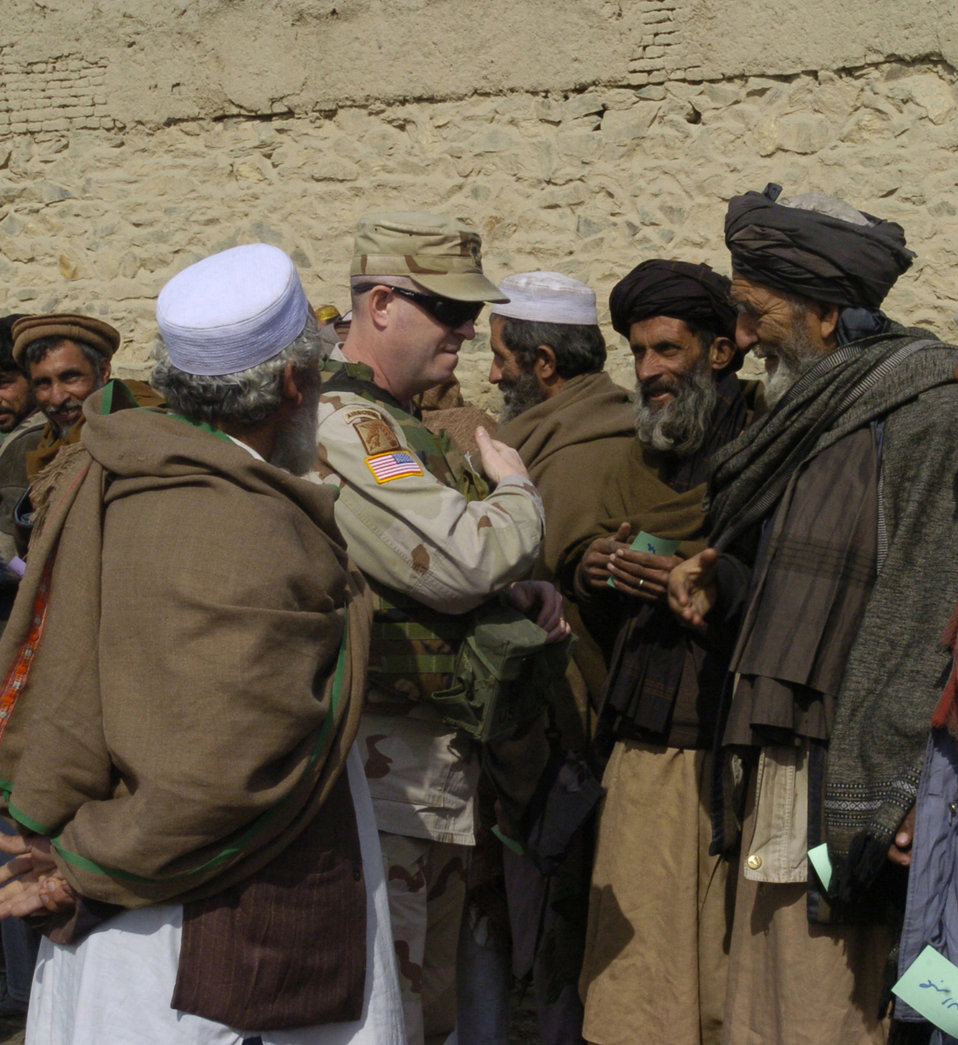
Americans reach out, help Afghans

KABUL, Afghanistan -- Army Sgt. 1st Class Darren Heusel greets Afghans before handing out supplies during a humanitarian visit here Feb. 22. He and other Soldiers of the 105th Mobile Public Affairs Detachment collected more than 30 boxes of supplies from Oklahoma and Kansas, including toiletries, clothing, food, toys, school supplies and blankets for Afghan families.